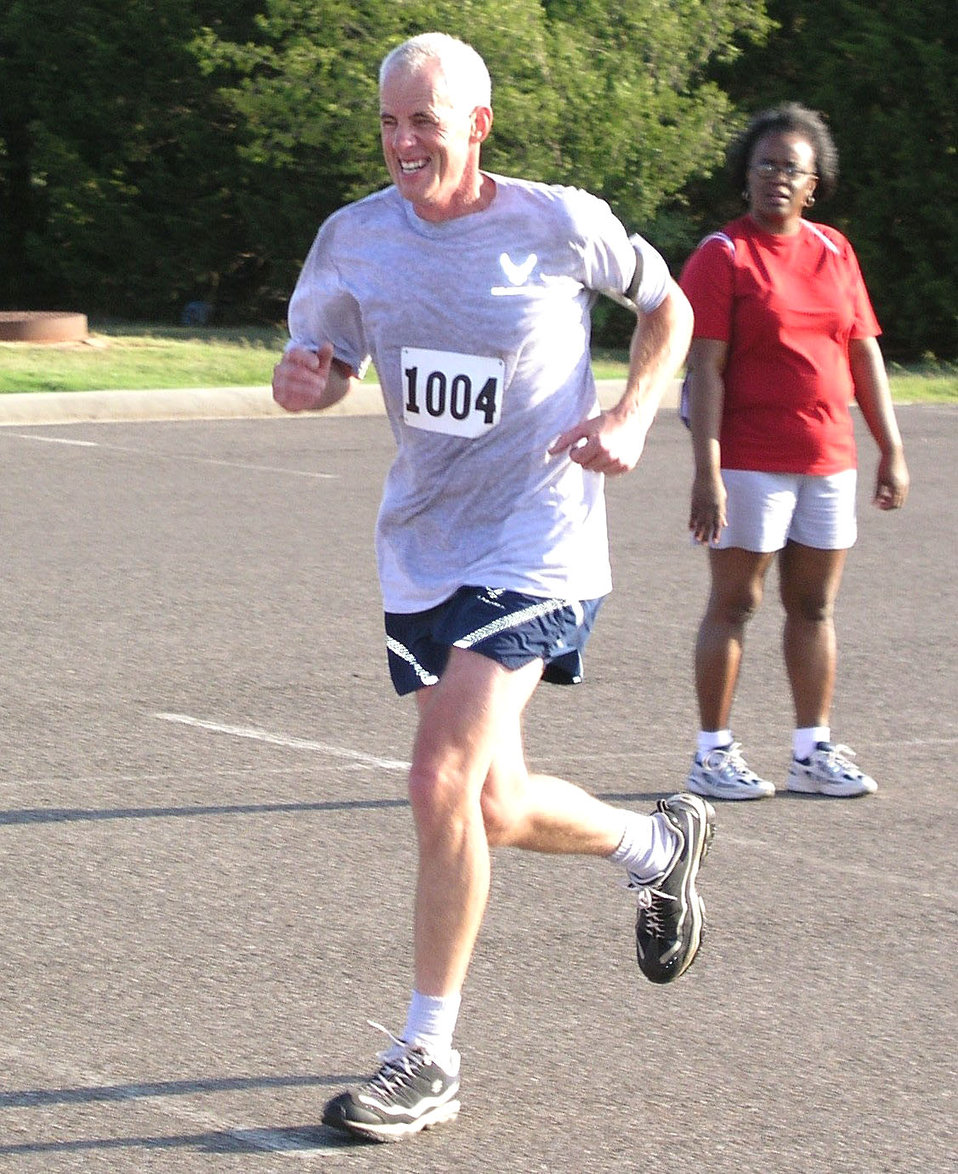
Reservist gets 'fit to fight'

Master Sgt. Matt Thomas runs in a 10K. Sergeant Thomas, a jet engine mechanic for the 513th Aircraft Maintenance Squadron at Tinker Air Force Base, Okla., lost 122 pounds and shaved 13.5 inches off his abdominal circumference in 14 months.